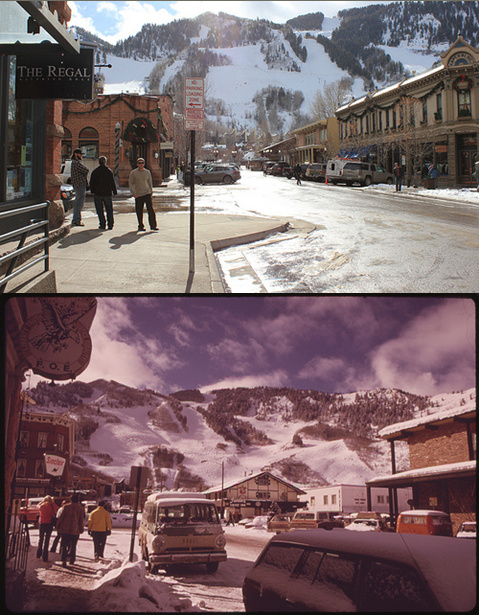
Aspen, CO 1974 and 2012

'Then' Documerica Photo: February, 1974 Looking North on Galena Street to the Ajax Mountain Ski Area by Ron Hoffman.
'Now' State of the Environment Photo: January, 2012 Documerica Location: “Ajax” Mountain by Dustin Wesley.

DOCUMERICA photographer Ron Hoffman captured images of skiing and other recreational activity in the Aspen, Colorado, area, in January and February of 1974.

Join in at www.flickr.com/groups/ourenvironment